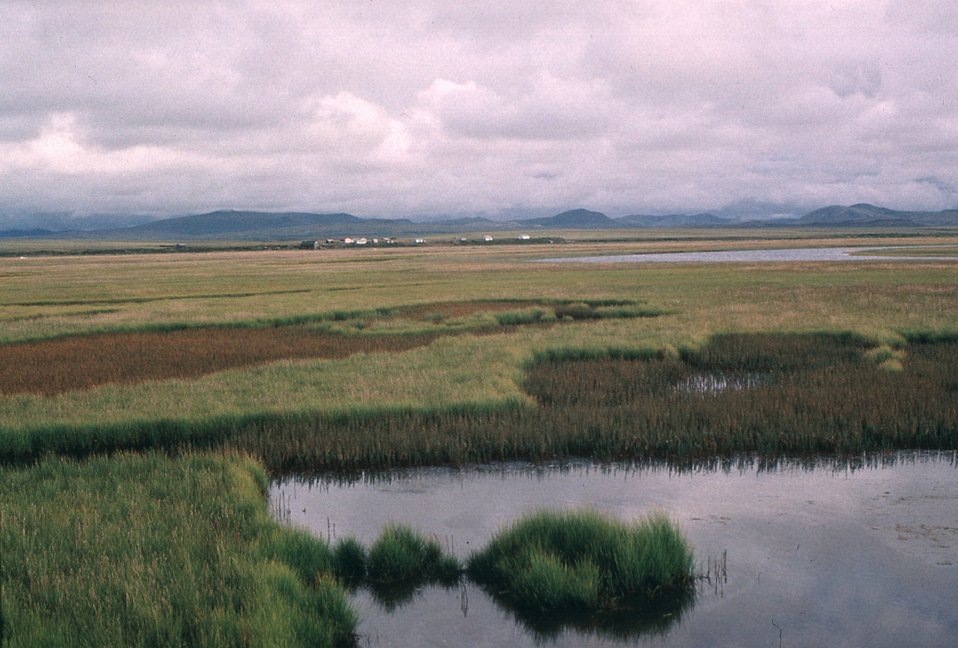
Autumn tundra, Seward Peninsula near Solomon